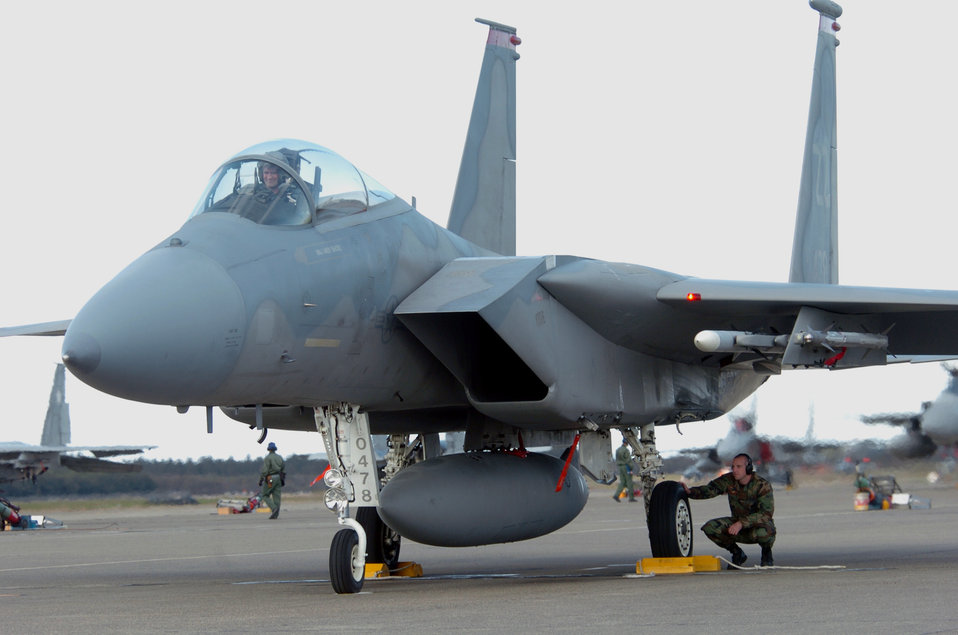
So long Sword

HYAKURI AIR BASE, Japan -- An F-15 Eagle prepares for an exercise Keen Sword 2005 mission here. The exercise, which ended Nov. 19, is designed to further increase the defensive readiness of Japanese and American forces through training in air, ground and sea operations, and to improve interoperability between the countries. The aircraft is assigned to the 67th Fighter Squadron at Kadena Air Base, Japan.